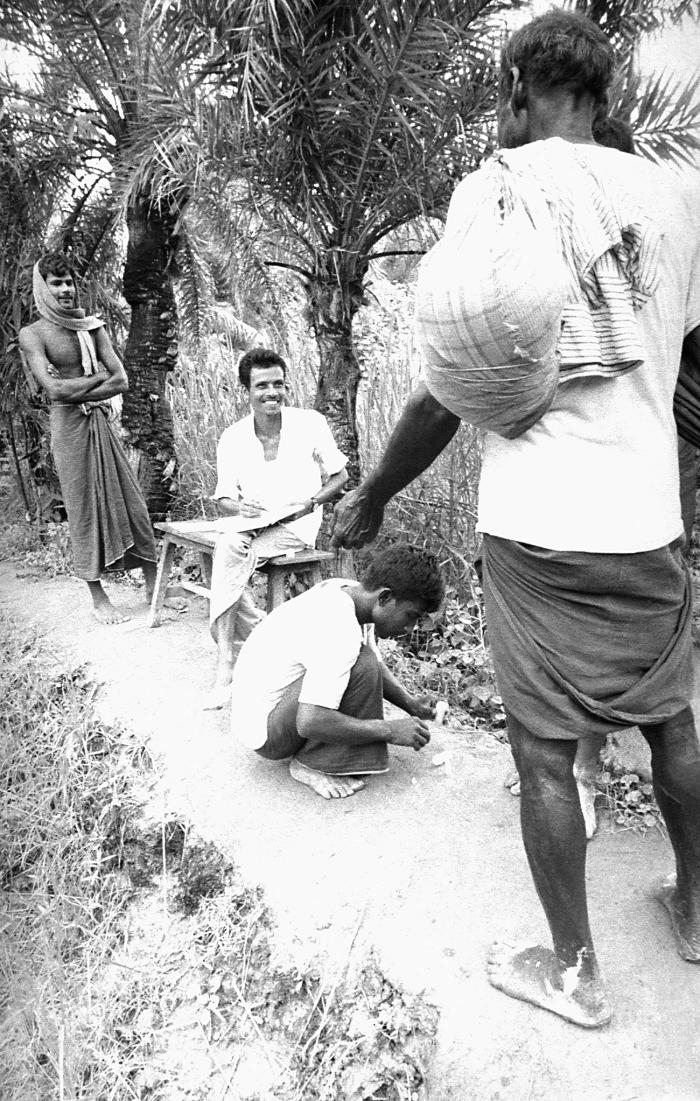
Standing guard at the entrance of a smallpox infected house, the crouching man is preparing a bifurcated needle, which he used to vaccinate the man in the foreground before he was allowed to enter the home. The soon-to-be vaccinee has made his left forearm available to the vaccinator. This home had been entered into the 'Containment Book' by the man in the background, which was a ledger that recorded all of the names of anyone living in, or within one half of a mile from a smallpox case, and subsequently all those listed were vaccinated against smallpox. Those vaccinated were followed until a 'successful' vaccination was observed.